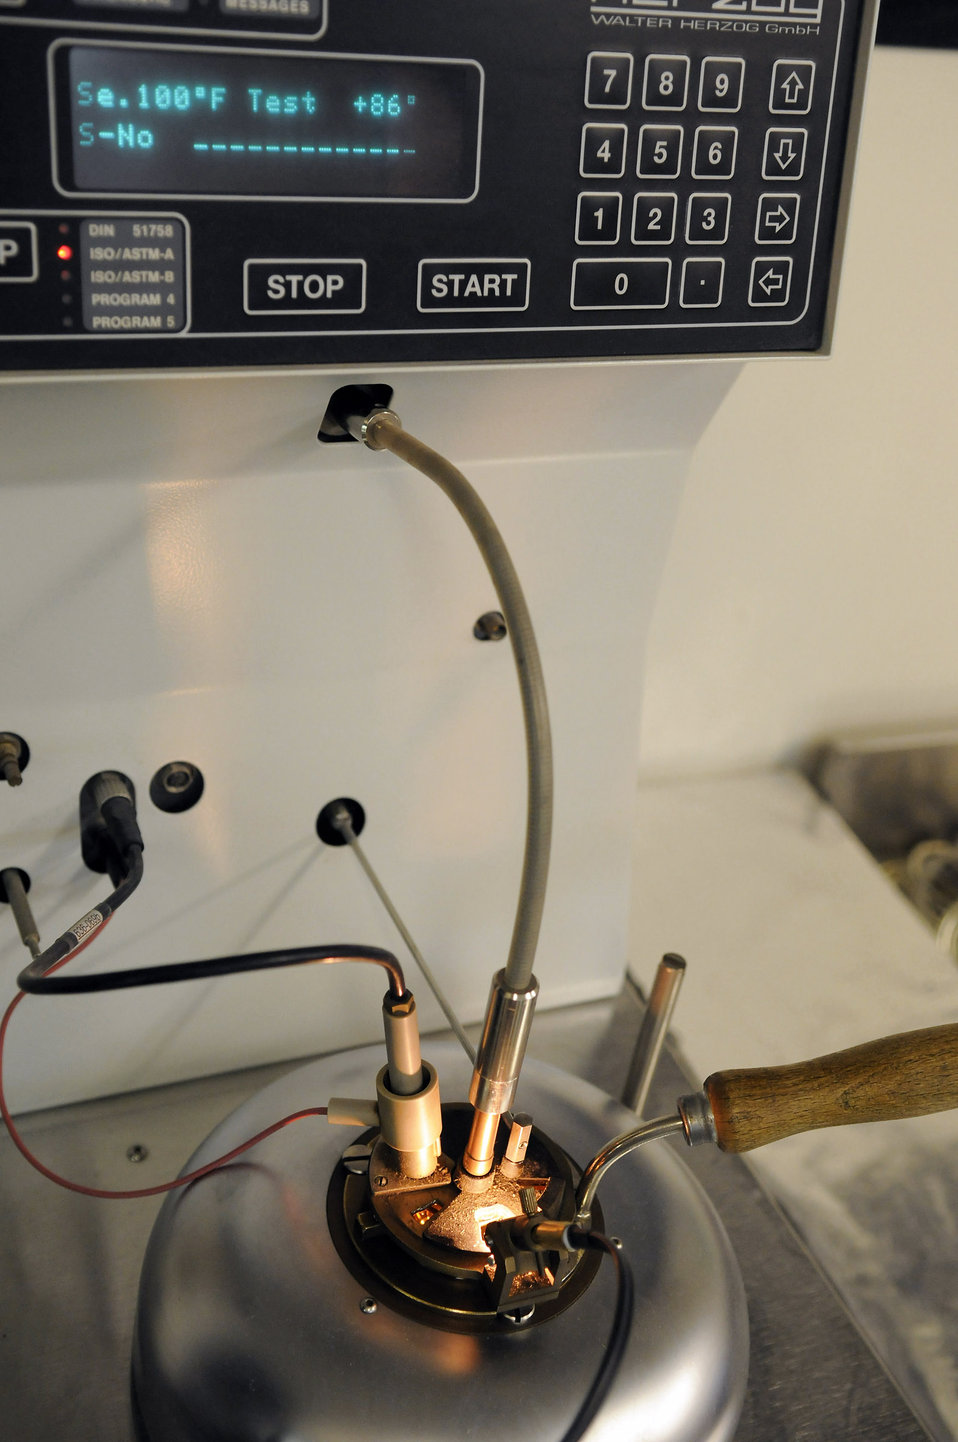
Fuel quality

Staff Sgt. Ronald Gasper uses a flash tester to perform a flash point test Dec. 8 at an air base in Southwest Asia. The flash point test is used to determine the temperature at which the fuel will ignite. The fuel is slowly warmed and every 2 degrees an ignition coil is briefly exposed over the fuel to identify how hot the fumes must be to ignite. Sergeant Gasper is a fuels lab technician assigned to the 379th Expeditionary Logistics Readiness Squadron and deployed from Scott Air Force Base, Ill. He is a native of Omaha, Neb.